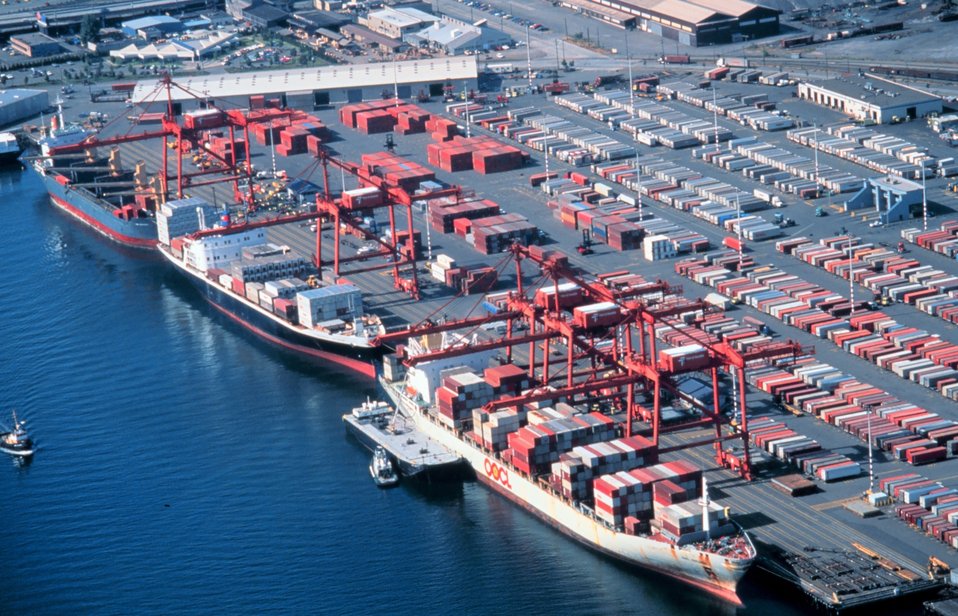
The containership piers at Seattle